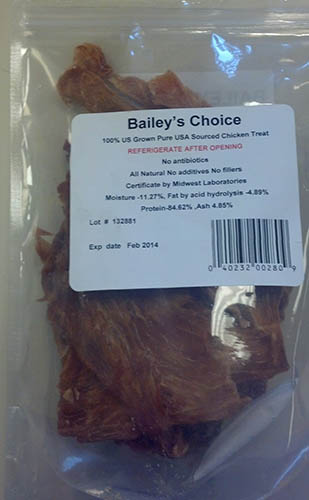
RECALLED – Pet Treats

November 6, 2013 – Product Recall – Bailey’s Choice Expands Product Recall of Dog Treats in Georgia.